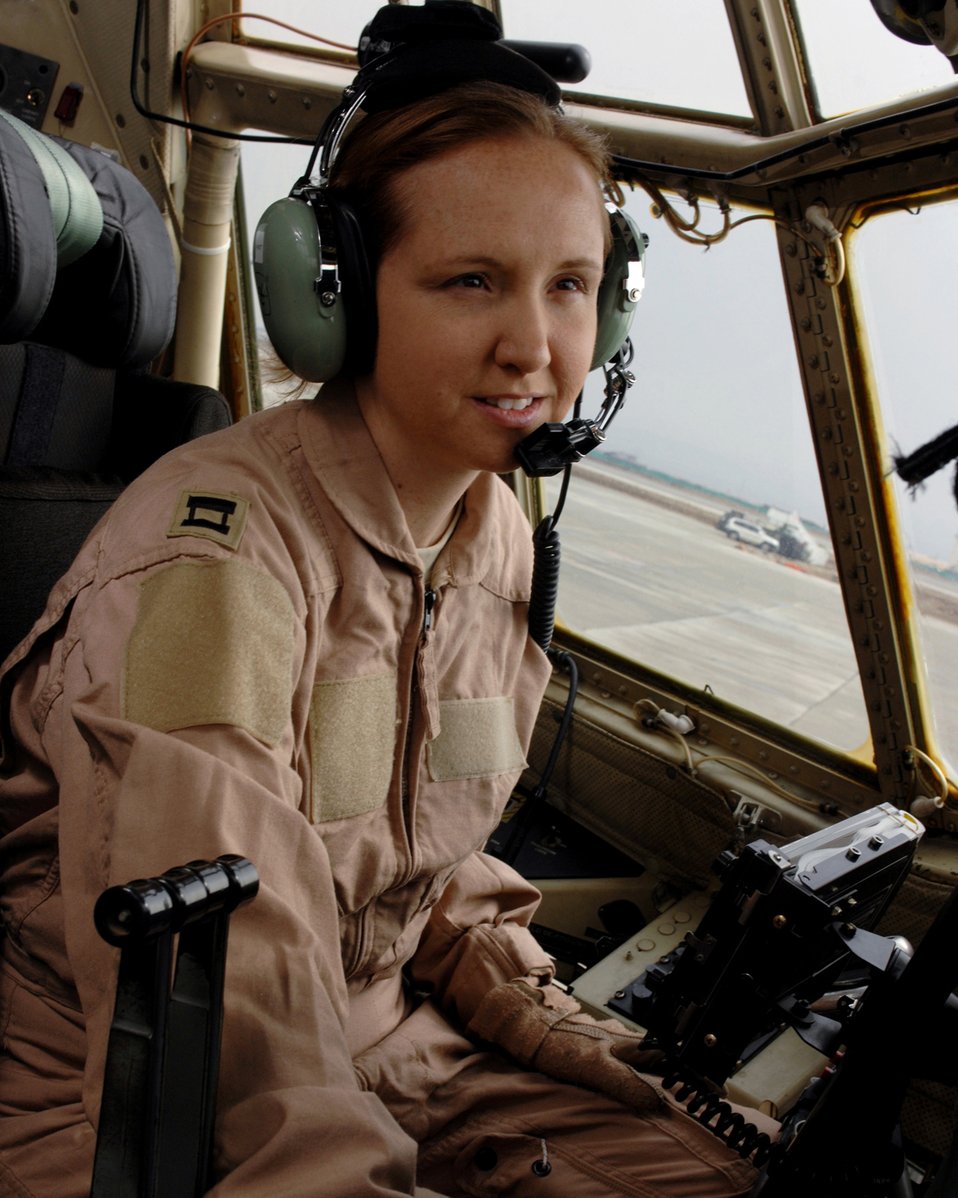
C-130 Hercules Pilot

Capt. Malinda Hammond, who began flying at age 15, loves flying the C-130 Hercules. What she likes most is flying the transport low and slow and air dropping troops and equipment.